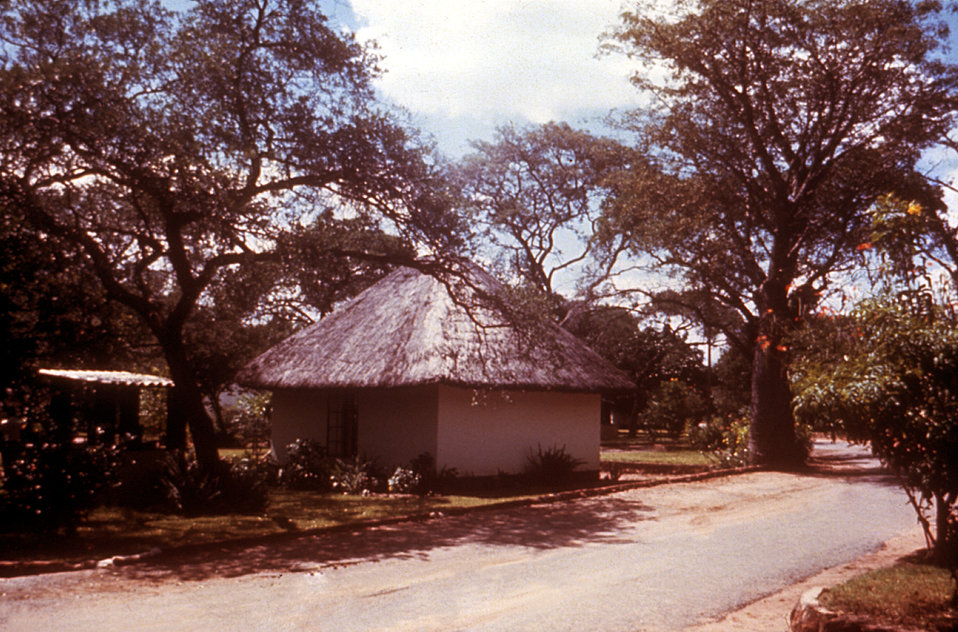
These rondavals, i.e., huts, were located at a Victoria Falls hotel in Rhodesia during a 1975 CDC Marburg virus investigation.